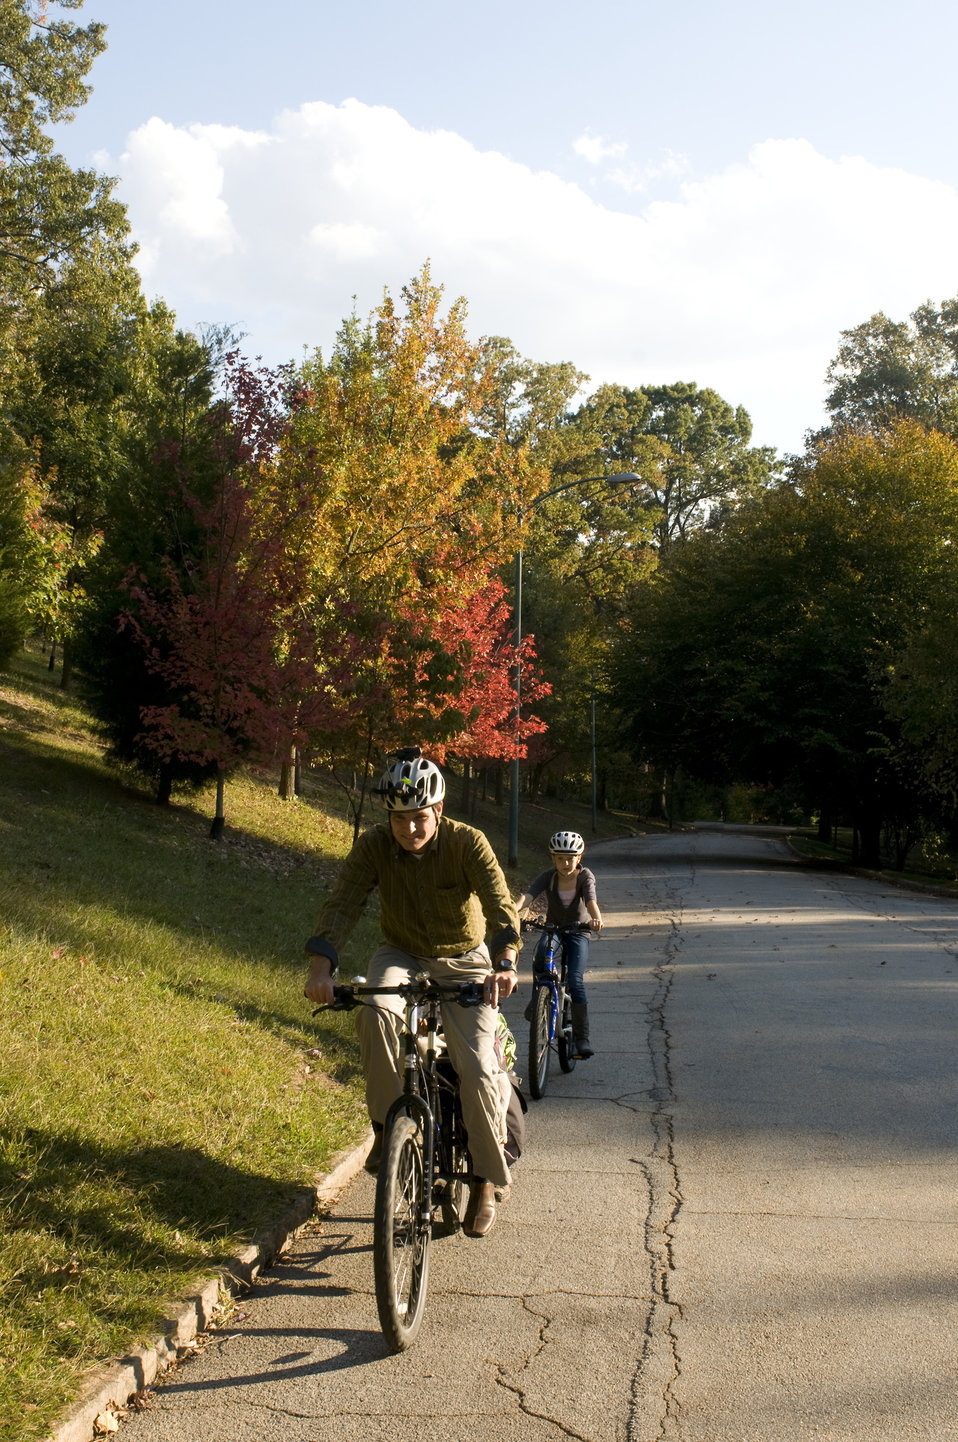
Protective measures having been taken by a careful father, this dad and his two young children were on their way, as they embarked on a Georgian bicycle trip. Riding behind her father, the daughter was riding her own bike, while the son, seated in a small child-safe bicycle seat, was riding on the same bike as his dad. All three were wearing aerodynamic safety helmets, and clothing to protect them from the sun, wind and insects. The only thing missing, was a piece of outerwear, which was very bright in color, allow for a greater degree of rider visibility.